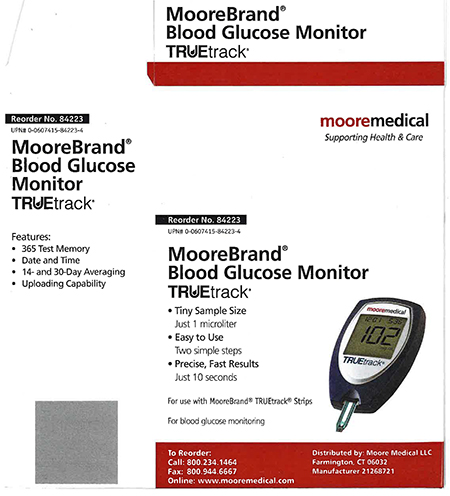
RECALLED – Blood Glucose Meters

January 2, 2014 – Product Recall – Nipro Diagnostics, Inc. Initiates Voluntary Recall of Certain TRUEbalance and TRUEtrack Blood Glucose Meters.